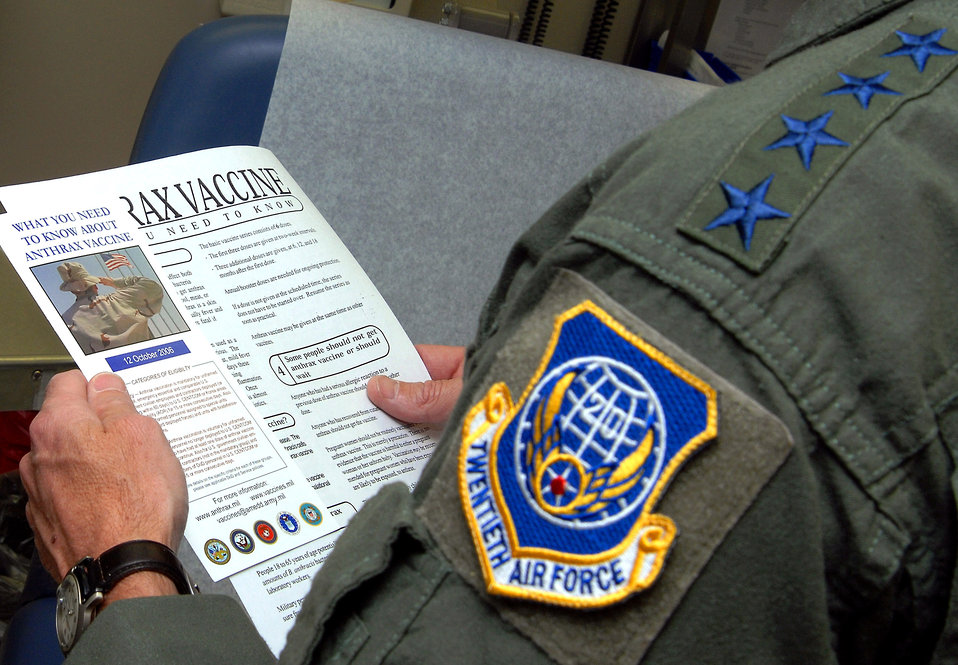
'Shooting' stars

Gen. Kevin P. Chilton reviews an Anthrax Vaccine brochure prior to receiving a vaccination May 4 at Peterson Air Force Base, Colo. General Chilton is the commander of Air Force Space Command. The Anthrax Vaccine Immunization Program mandates Airmen assigned to high-threat areas receive the anthrax vaccine series, while also providing Airmen the choice to continue anthrax vaccines if they are not assigned to a designated high-threat area.